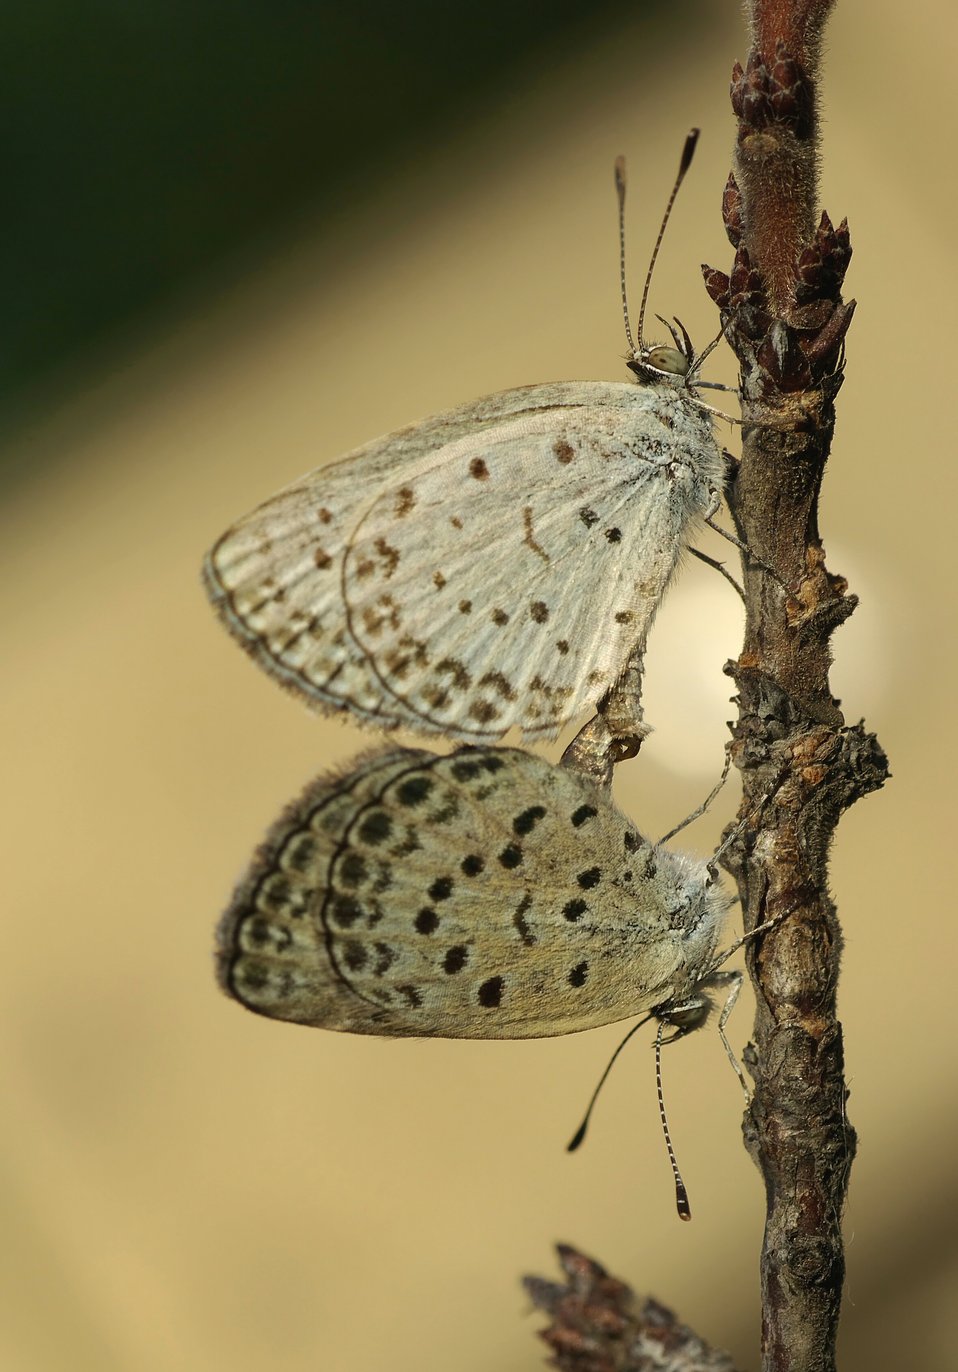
Name Pseudozizeeria maha Family Lycaenidae Pale Grass Blue, mating 日本語: ヤマトシジミ、交尾
Location: Osaka, Japan
Camera Details:
Camera: PENTAX K10D
Lens: TAMRON SP AF90mm F/2.8 Di (Model272E)